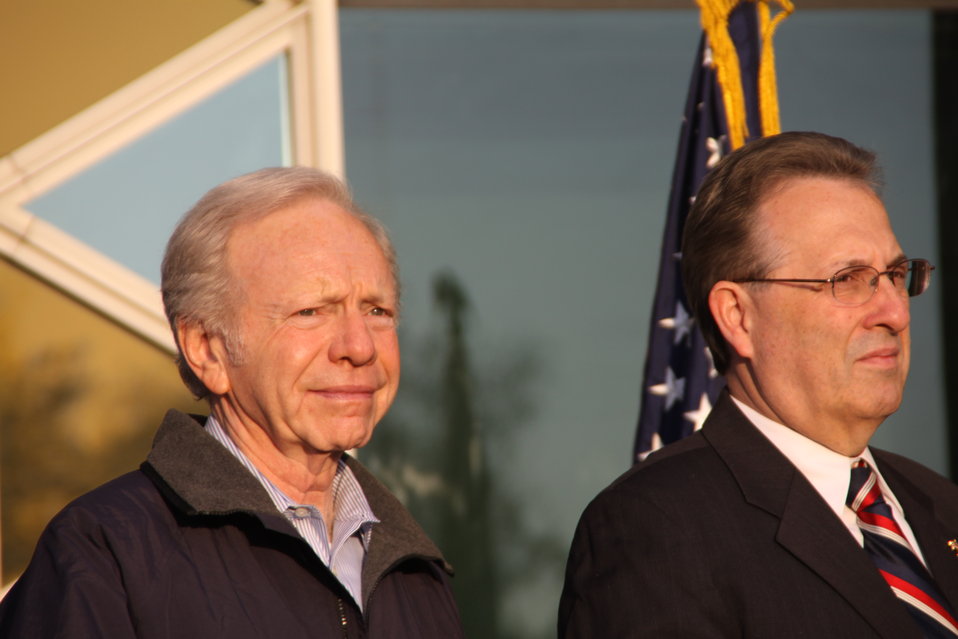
Senator Lieberman and Ambassador Wayne